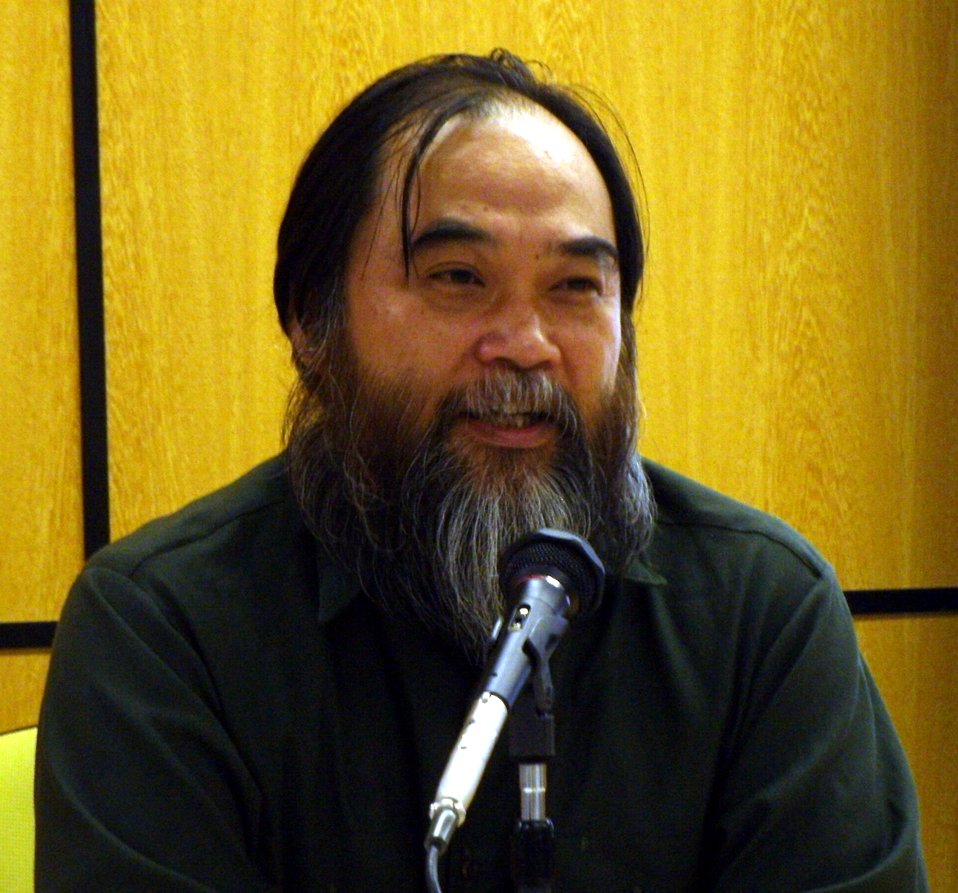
Harumichi Yamada, Prof. of the Tokyo Keizai University
WCJ2010 (November 14, 2010)